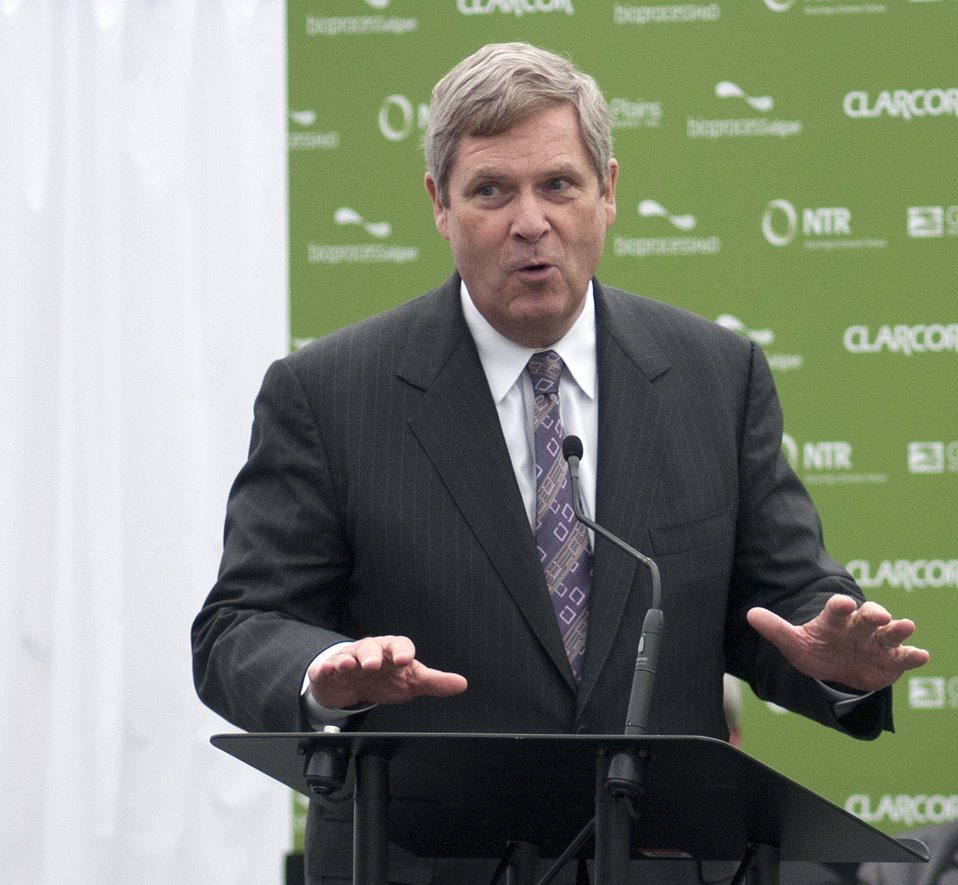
Agriculture Secretary Tom Vilsack speaks at the Grand Opening ceremony of Phase II of the BioProcess Algae facility at Green Plains Renewable Energy (GPRE) Inc. on Friday, Apr. 15, 2011 in Shenandoah, IA. Phase II is a key component in the commercial scale photo bioreactors/harvesters. The operation is co-located within an GPRE’s ethanol factory where BioProcess Algae technology is used to treat waste products; carbon dioxide, recycled heat and water to mass-produce algae. Algae from this facility are used for animal feeds, pharmaceutical and beauty products.